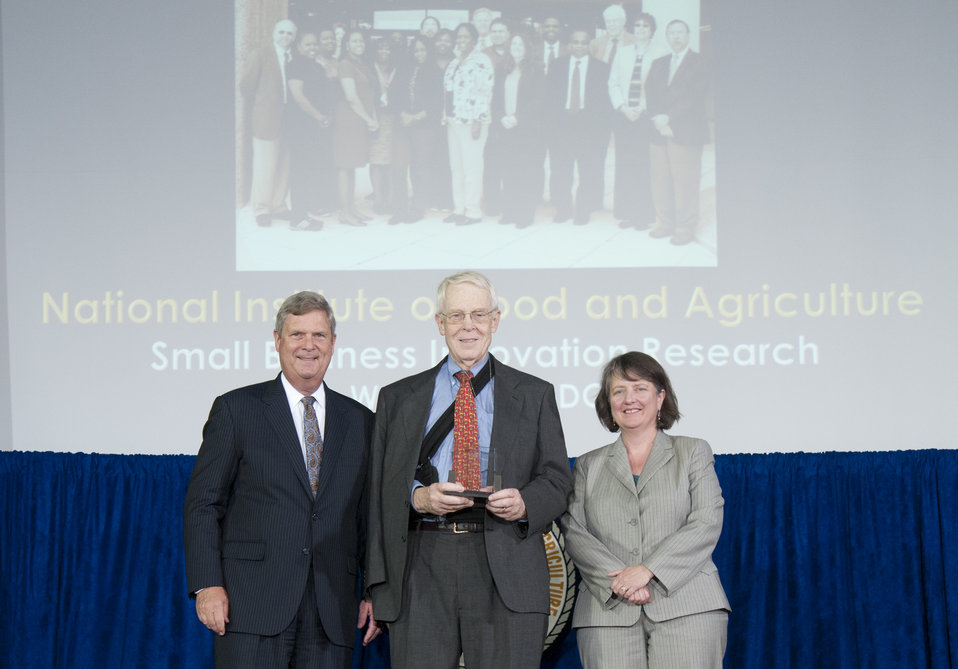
Agriculture Secretary Tom Vilsack and Agriculture Deputy Secretary Kathleen Merrigan present the Secretary’s Honor Award to Small Business Innovation Research National Institute of Food and Agriculture (NIFA) group leader Dr. Charles F. Cleland at the U.S. Department of Agriculture (USDA) 64th Annual Honor Awards Ceremony in Washington, D.C. on Wednesday, Sept. 12, 2012. The Small Business Innovation Research team advanced rural economies through supporting the commercialization of new scientific concepts by small businesses.